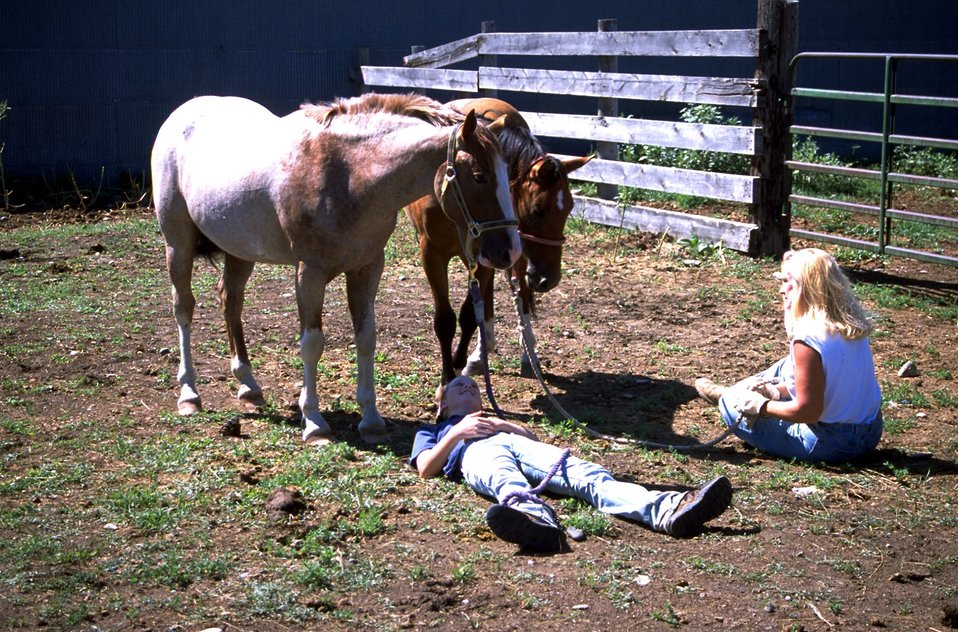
Two Adopted Horses learning trust